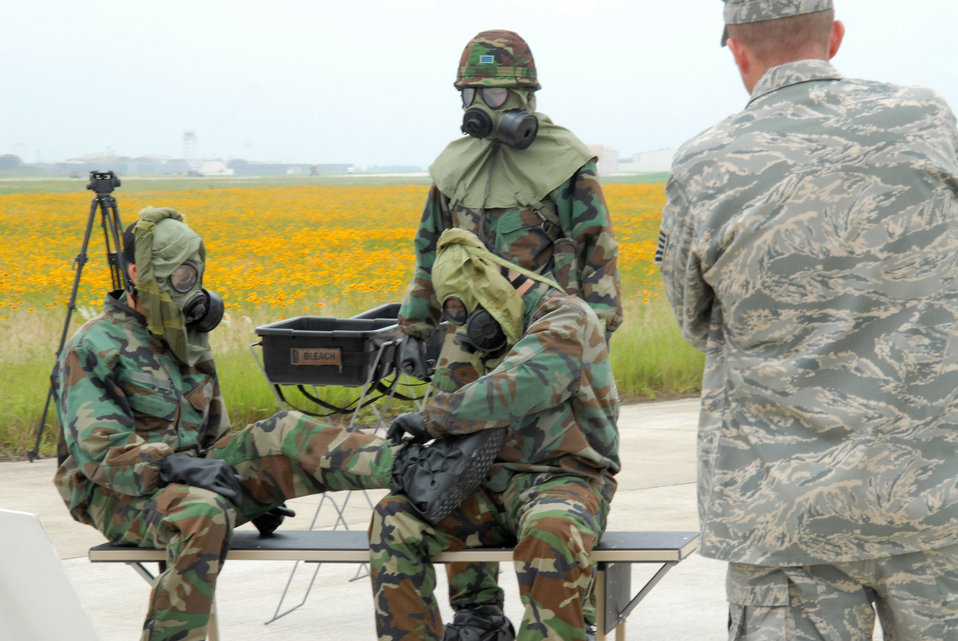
South Korean army UAVs enhance training at Kunsan

Tech. Sgt. Frank Roman observes South Korean army soldiers while they remove their chemical warfare gear June 24 at Kunsan Air Base, South Korea. South Korean army soldiers demonstrated the capabilities of their nuclear, biological and chemical detection technology during a two-day combined training session here June 23 and 24. Sergeant Roman is the NCO in charge of readiness and training from the 8th Civil Engineer Squadron.